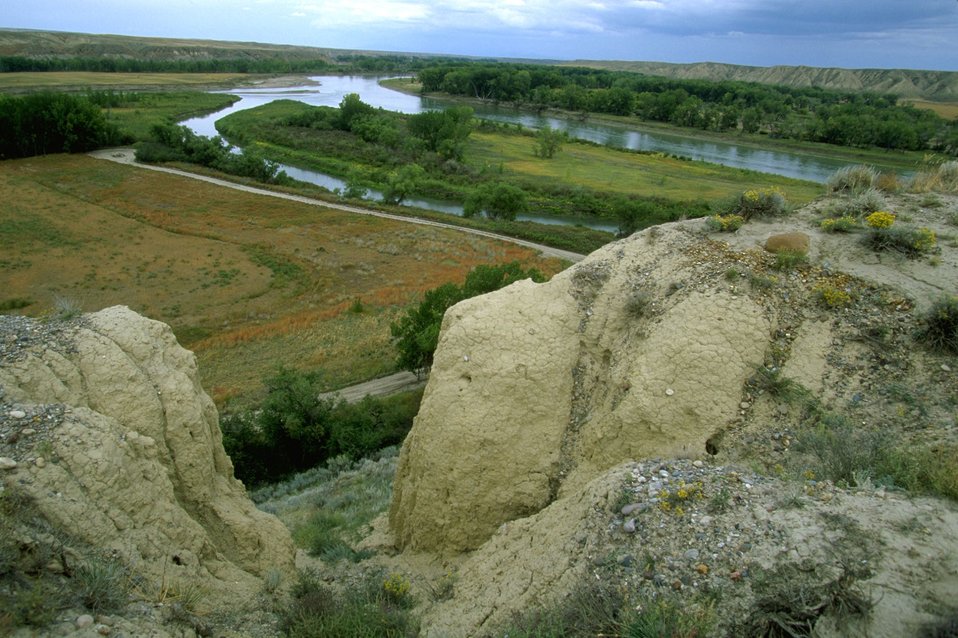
Richard Wood Watchable Wildlife Area